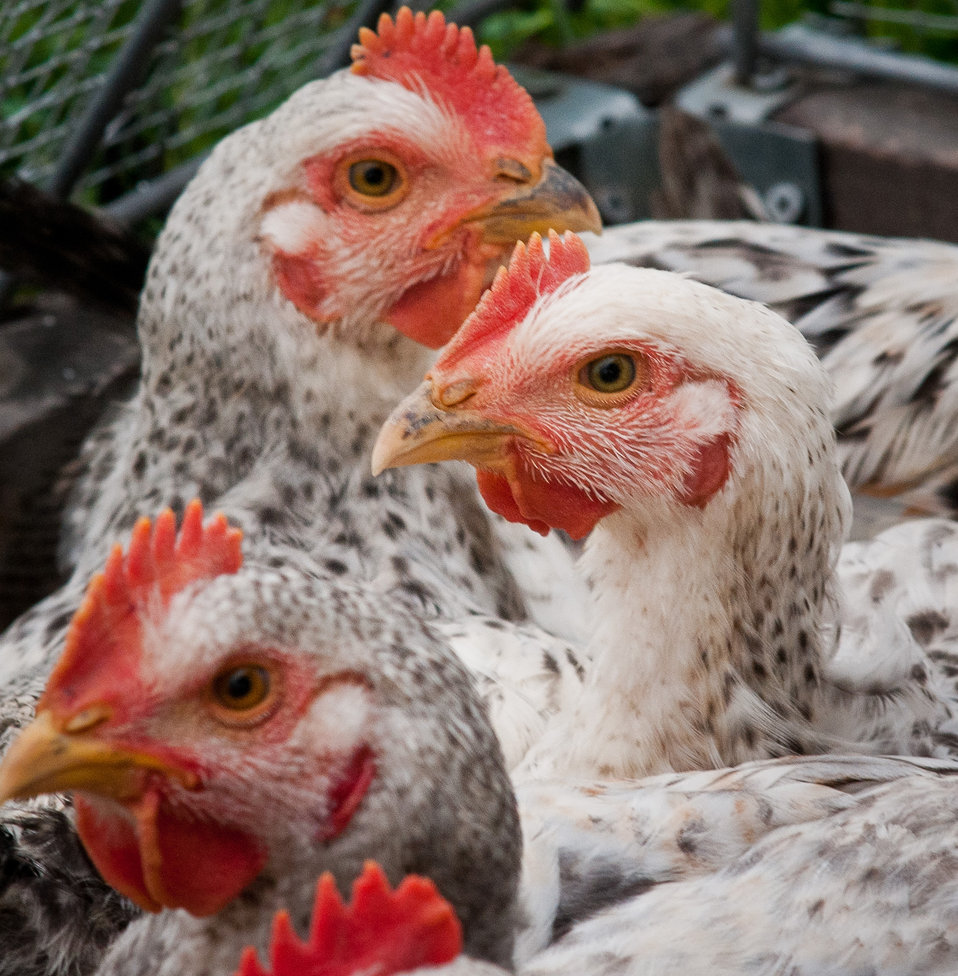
Broiler chickens graze on organic pastures and live in pens that protect them from predators, direct sun light, and wind at Nick’s Organic Farm, owned by Nick Maravell in Adamstown, MD on Friday, July 12, 2013. The enclosures are light enough to be moved by hand, each day, one consecutive section at a time. This allows the pasture to easily recover from the grazing. The farm produces Black Angus beef, chicken, turkey, eggs, hay, soybeans, corn, alfalfa, orchard grass, rye; and other crops. The cattle are 100% grass-fed receiving certified organic pasture, certified organic hay (in winter), water and mineral salts mixed with sea kelp. The cattle are not fed hormones, antibiotics or animal products. Poultry feed from grain is ground from organic grain. The poultry also graze on organic pastures. The farm has conducted on-farm research with federal, state and non-profit agencies to refine organic practices. An organization such as the U.S. Department of Agriculture (USDA) Agricultural Research Service (ARS) center in Beltsville has been able to conduct research to improve organic crops and to breed and manage the cattle so that they have.